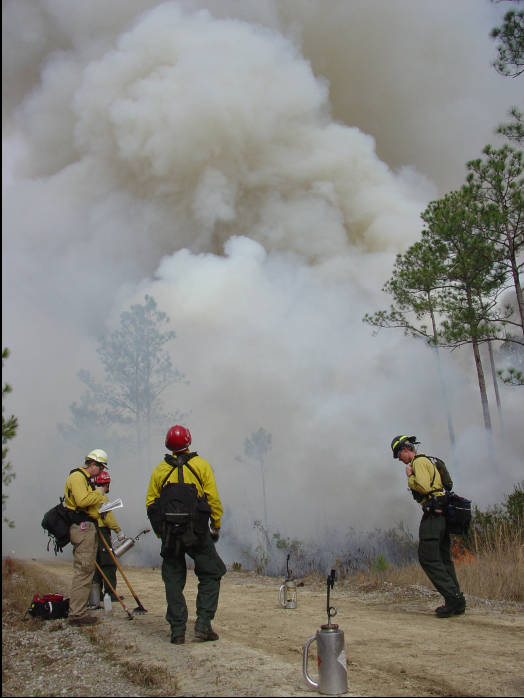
PFTC prescribed fire training